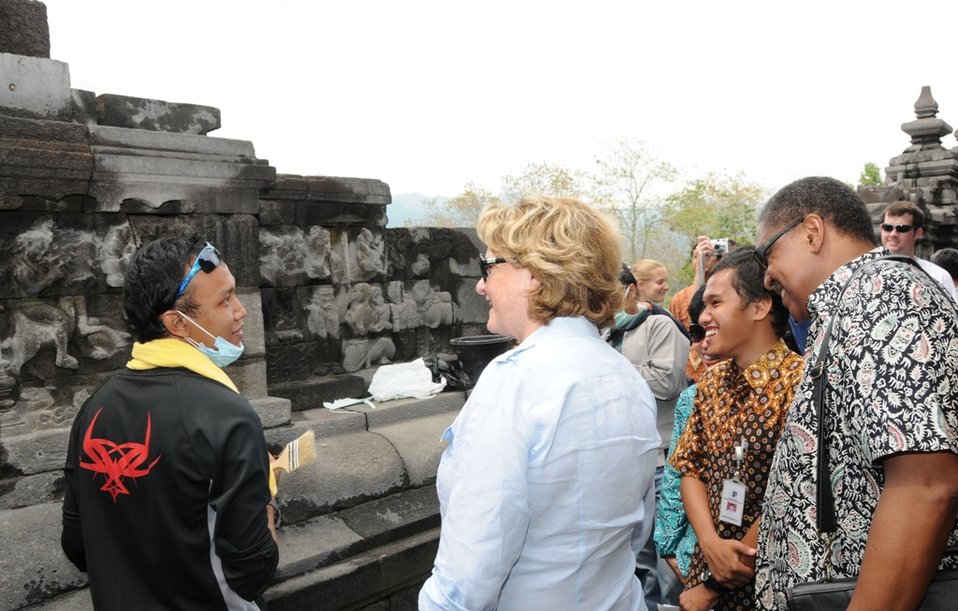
Under Secretary McHale Poses for a Photo at the Footsteps of the Borobudur Temple

U.S. Undersecretary of State for Public Diplomacy and Public Affairs Judith A. McHale speaks with the Head of Administration and Finance of the Borobudur Cultural Park, Hendro Hastjarjo, and U.S. Embassy in Jakarta’s Public Affairs Officer, Don Q. Washington, during a December 4, 2010, visit to observe the cleaning process of the footsteps of the Borobudur Temple after it was covered in ash due to the recent Mt. Merapi eruption.